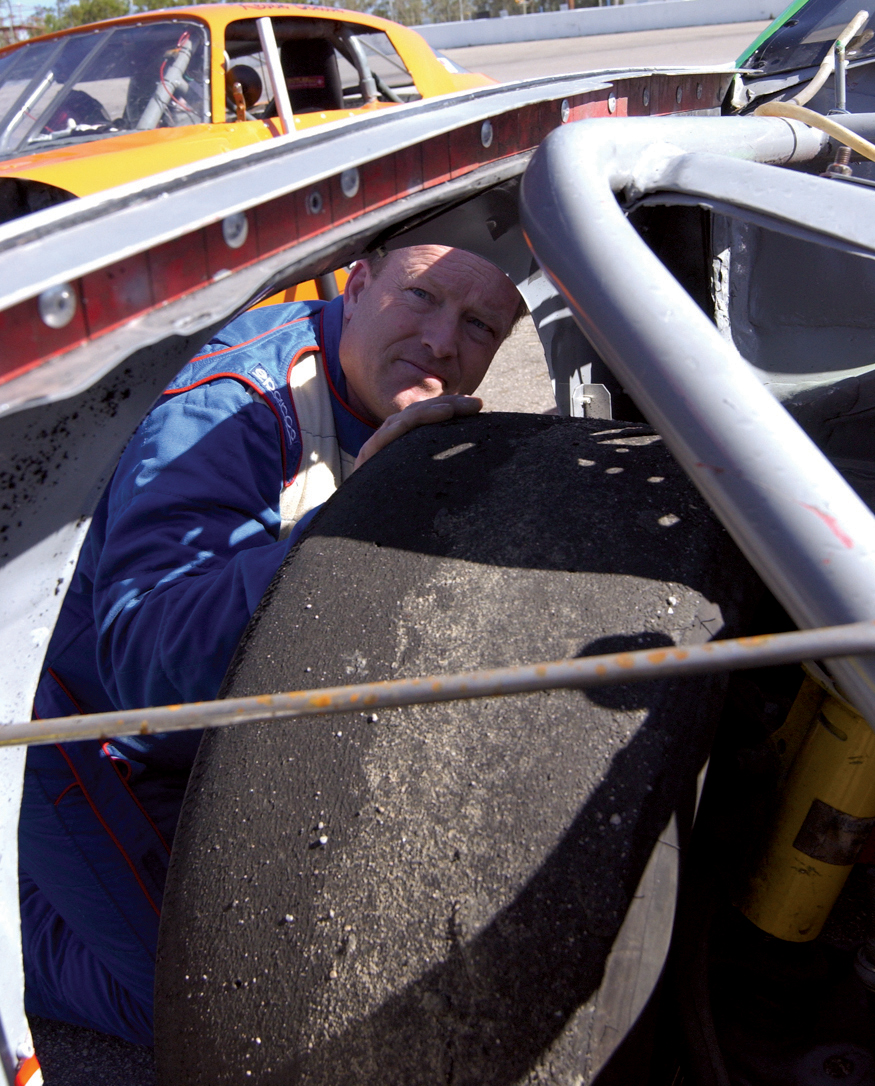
Airman spends free time living only way he knows -- fast

KENLY, N.C. -- Master Sgt. Warren Howard checks his tire's clearance before a race here recently. If there is not enough space between the tire and frame, it can cause an accident during the race. He has raced cars since he was 16 years old and is the environmental coordinator with the 4th Equipment Maintenance Squadron.